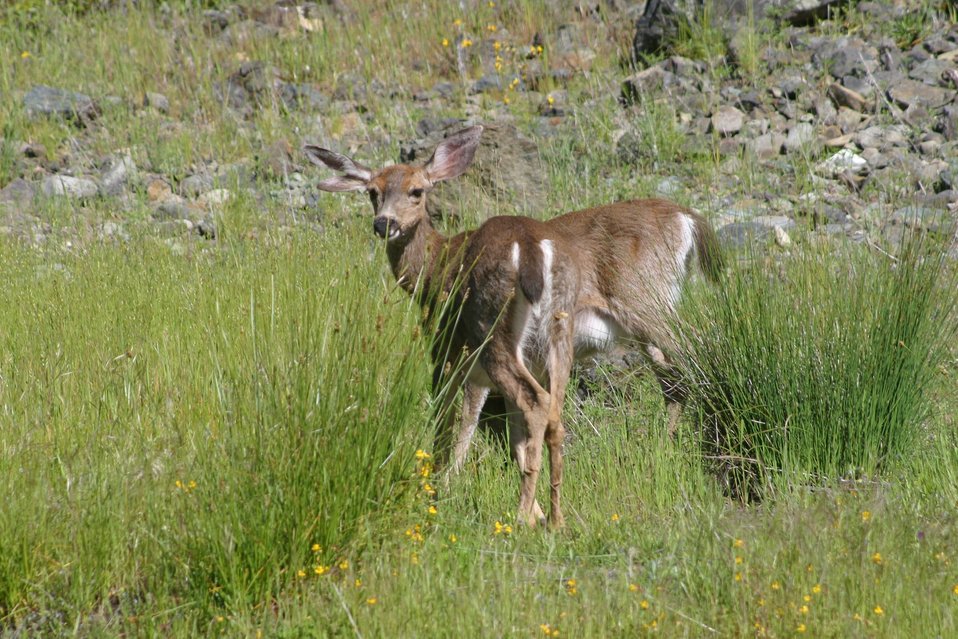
Wild section of the Rogue River from Grave Creek to Foster Bar May 19 to May 22.